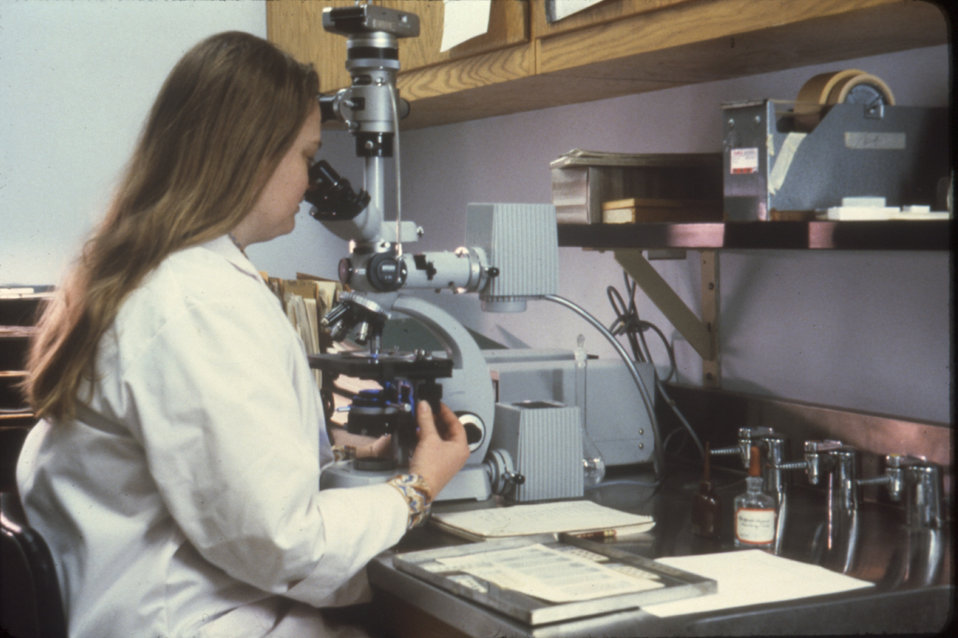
This scientist is viewing a Legionella sp. using direct fluorescent antibody staining and an epi-illumination microscope.